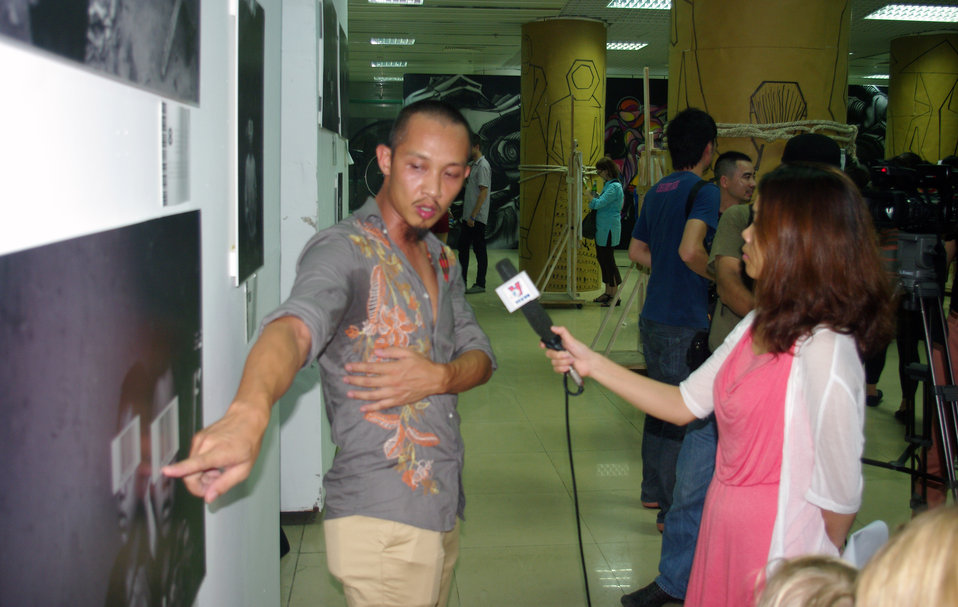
MTV EXIT opens Youth Forum in Hanoi